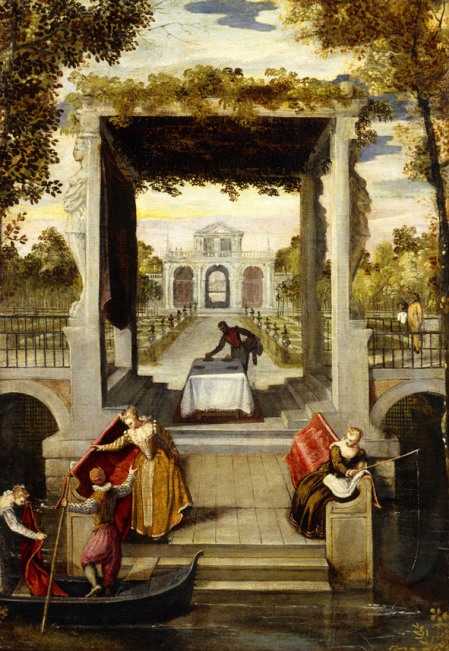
'Garden in a Venician Villa', painting by Benedetto Caliari, 1570-1580, Academia Carrara (Bérgamo, Italy)